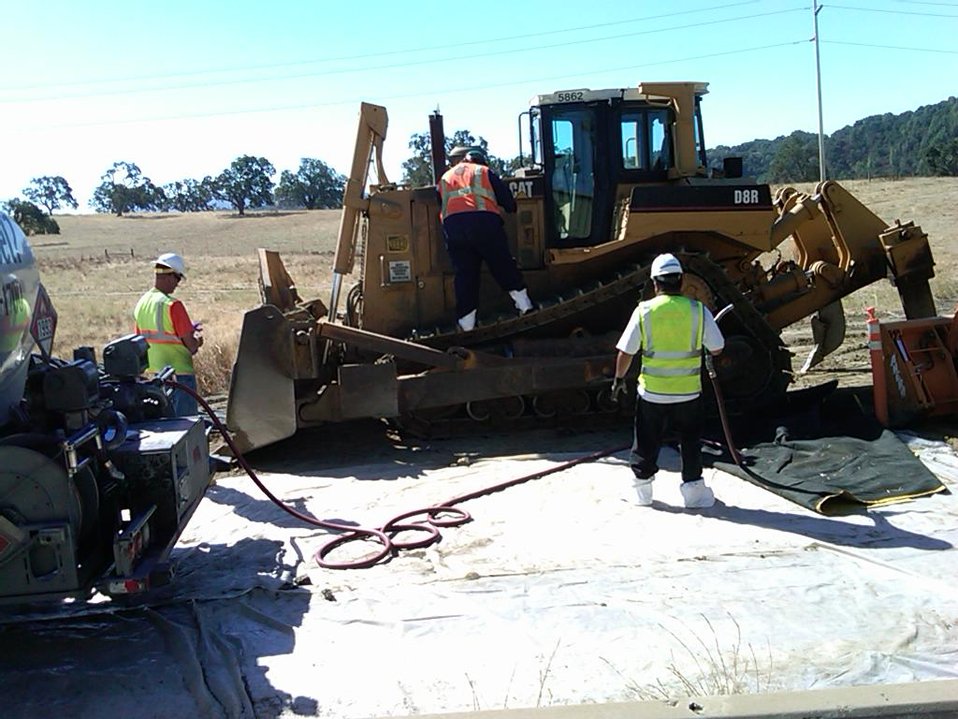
Recovery Act Supports Soil and Debris Cleanup, Groundwater Treatment at SLAC

Recovery Act workers are on track to remove more than 30,000 cubic yards of contaminated soil and debris at the SLAC National Accelerator Laboratory by September 2011.
The Recovery Act invested $14.3 million in legacy cleanup activities at SLAC. In addition to removing contaminated soil and debris that is shipped to local disposal facilities, Recovery Act workers installed three new groundwater treatment systems.